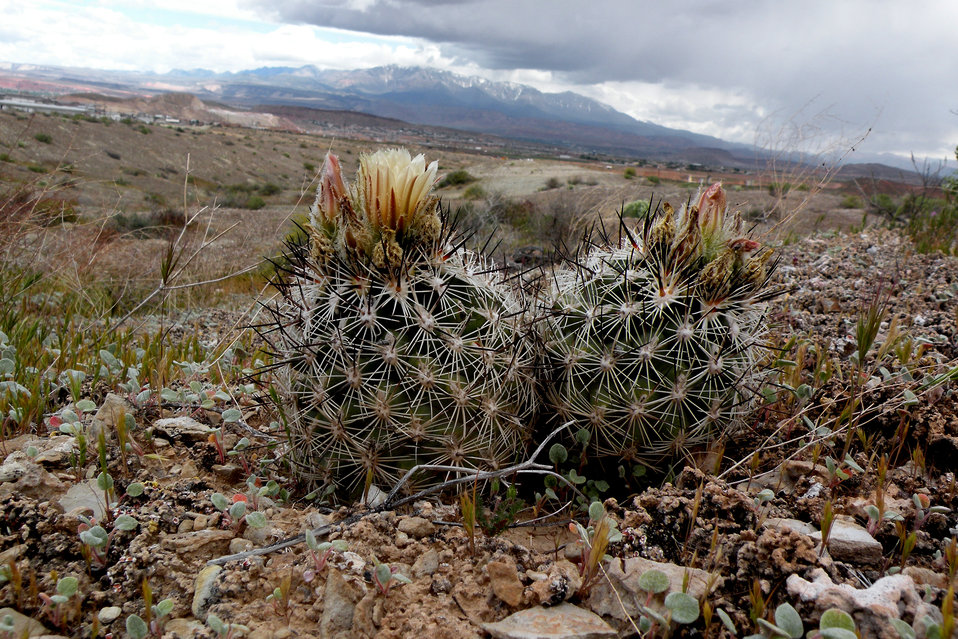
Siler pincushion cactus (Pediocactus sileri)

Siler pincushion cactus is restricted to clay soils of the Moenkopi Formation. It occurs on rolling hills and bluffs in sparsely vegetated desert shrub communities between 3,000 and 5,000 ft. in elevation. Siler Pincushion cactus is endemic to northern AZ and southwestern UT. It is listed threatened.